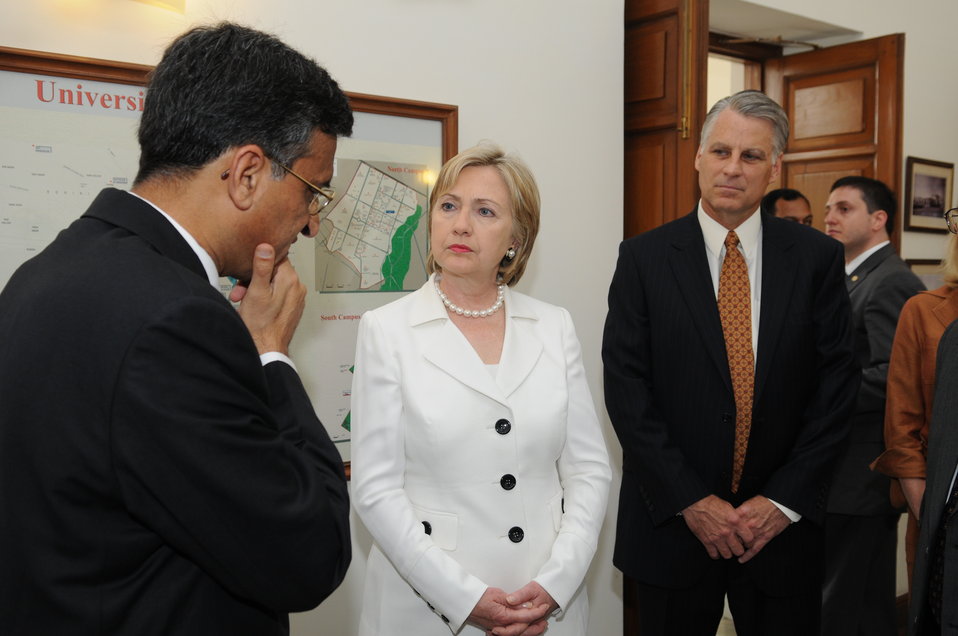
Secretary Clinton Speaks at University of Delhi

U.S. Secretary of State Hillary Rodham Clinton and U.S. Ambassador-Designate to India Timothy Roemer listen to University of Delhi Vice Chancellor Deepak Pental prior to Secretary Clinton's speech at the University of Delhi in New Delhi, India July 19, 2009.